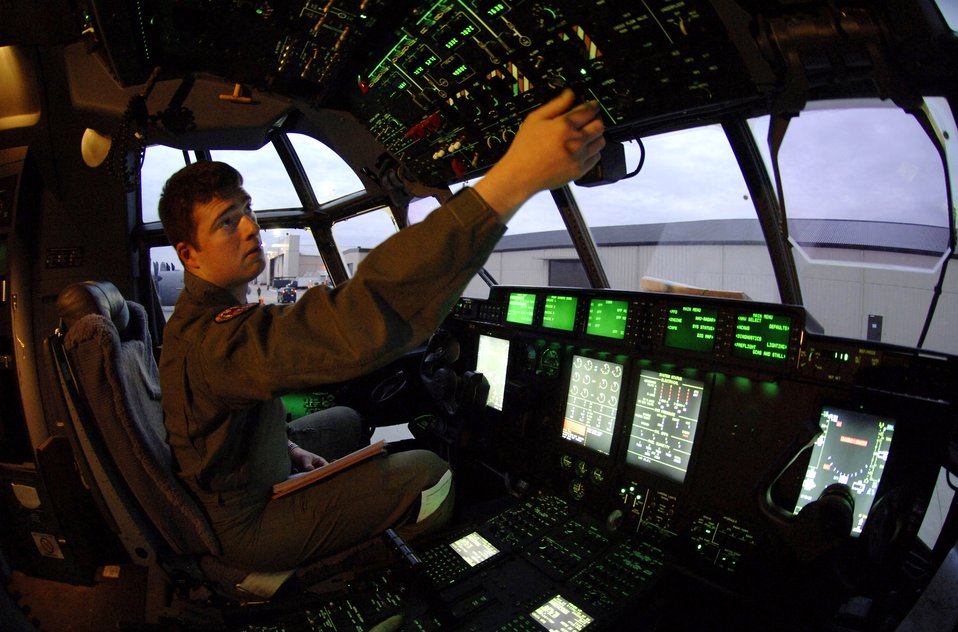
Total force provides seamless airlift support

Staff Sgt. Joseph Maker performs preflight start-up on a C-130 Hercules an hour before departure Jan. 9 at Ramstein Air Base, Germany. Sergeant Maker is a loadmaster from the 143rd Airlift Wing at Quanset State Airport in Rhode Island.